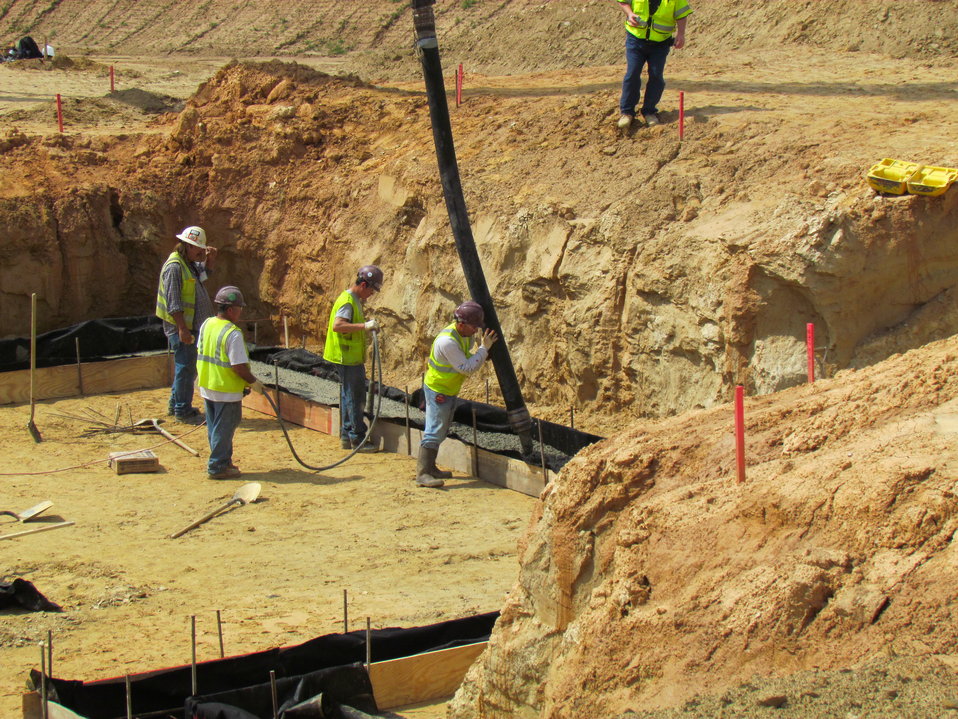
Net-Zero Energy Residential Test Facility - Construction photo showing pouring of foundations.